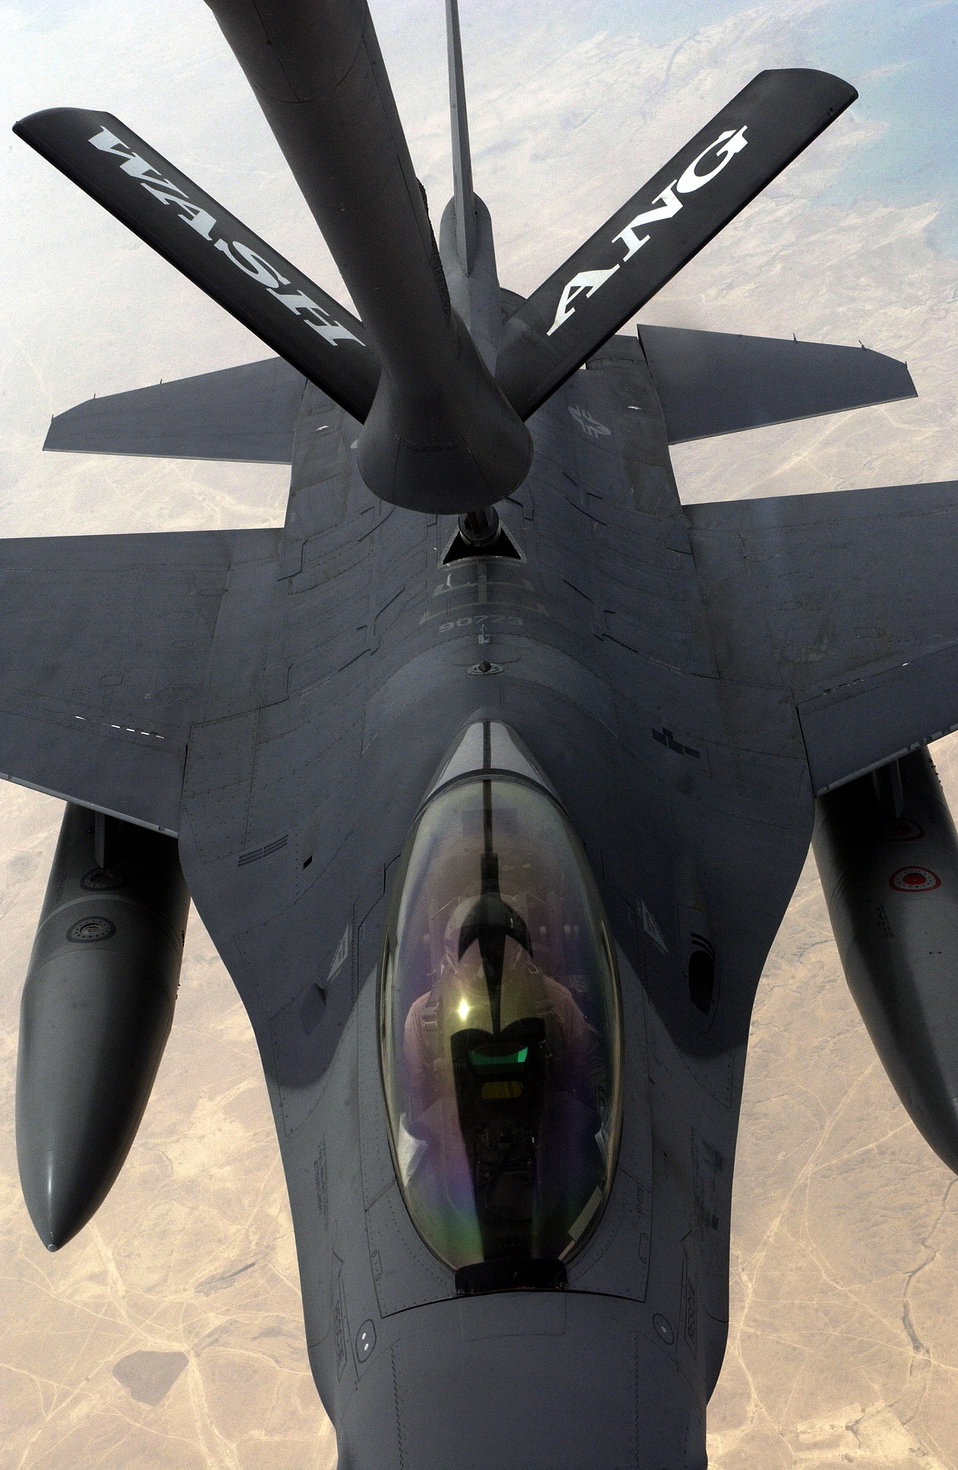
One billionth

SOUTHWEST ASIA -- An F-16 Fighting Falcon from the 555th Fighter Squadron at Aviano Air Base, Italy, refuels from a KC-135 Stratotanker on April 21 following an aerial refueling. The F-16 received the 1 billionth pound of fuel from Combined Forces Air Component Command refuelers since Jan. 30, 2003.